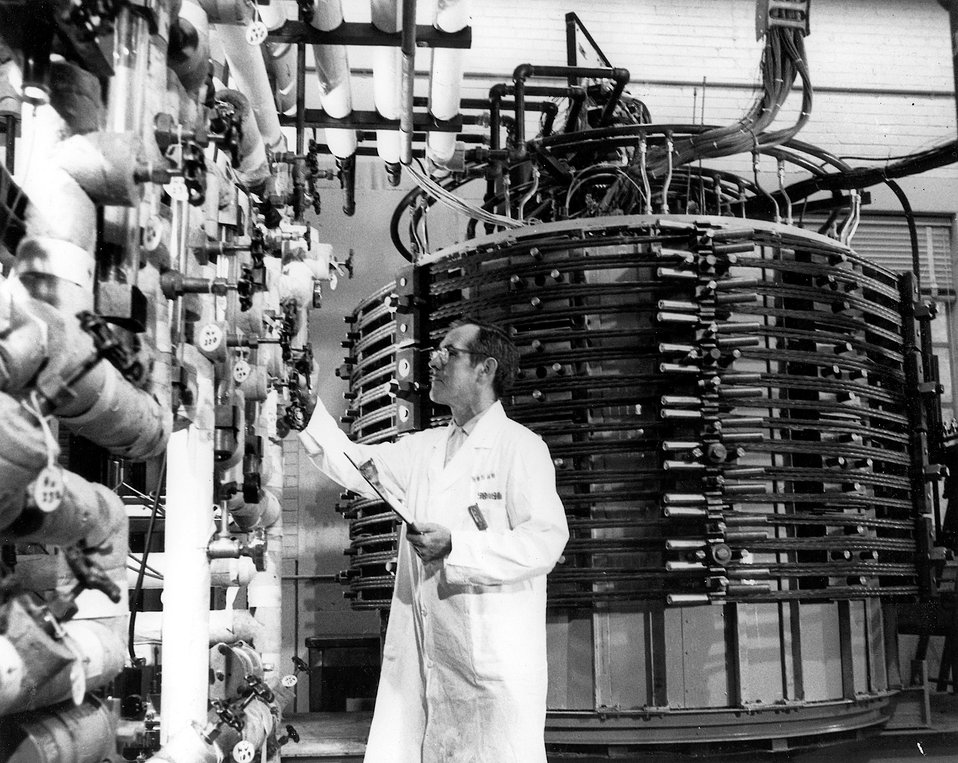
Researchers at the U.S. Atomic Energy Commission's Oak Ridge (Tennessee) National Laboratory are using this experimental equipment to investigate the possibility for using pre-stressed concrete in the fabrication of pressure vessels for gas-cooled reactors. c. 1972